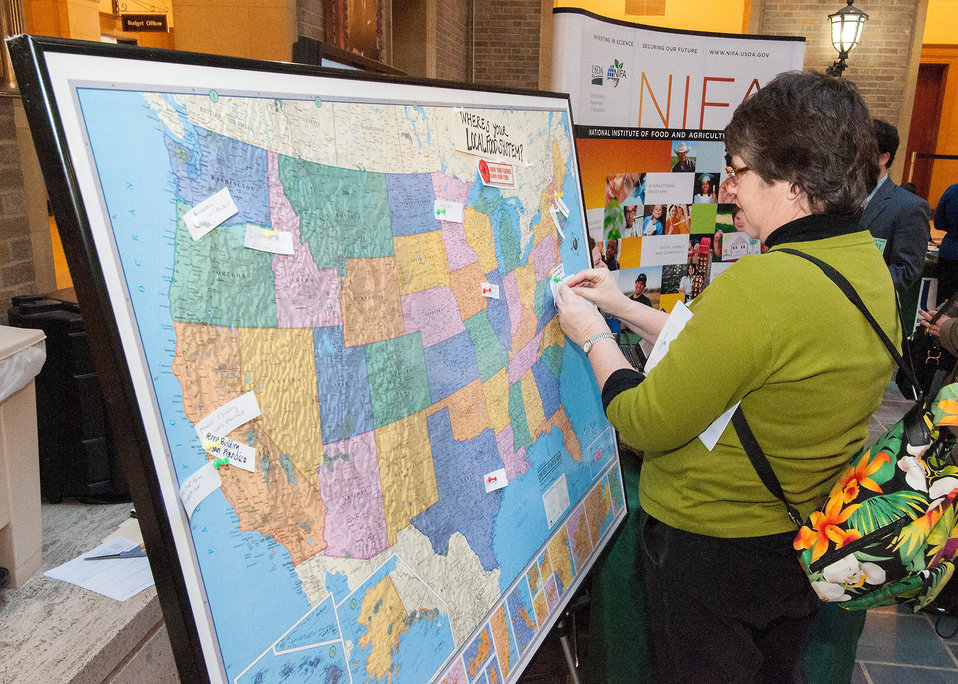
Pat Abler a Washington, D.C. tour guide had the opportunity to pin the location of her favorite farmer’s market in Burke, VA on the Your Farmer Know Your Food map exhibit at the U.S. Department of Agriculture (USDA) Open House on the National Mall, in Washington, D.C., on Friday, Jan. 18, 2013. The Open House was an opportunity to learn more about USDA’s role in agriculture, local and regional food systems, natural resource conservation, nutrition, research and rural development. Abler stopped in to gain more information about USDA for her tours.